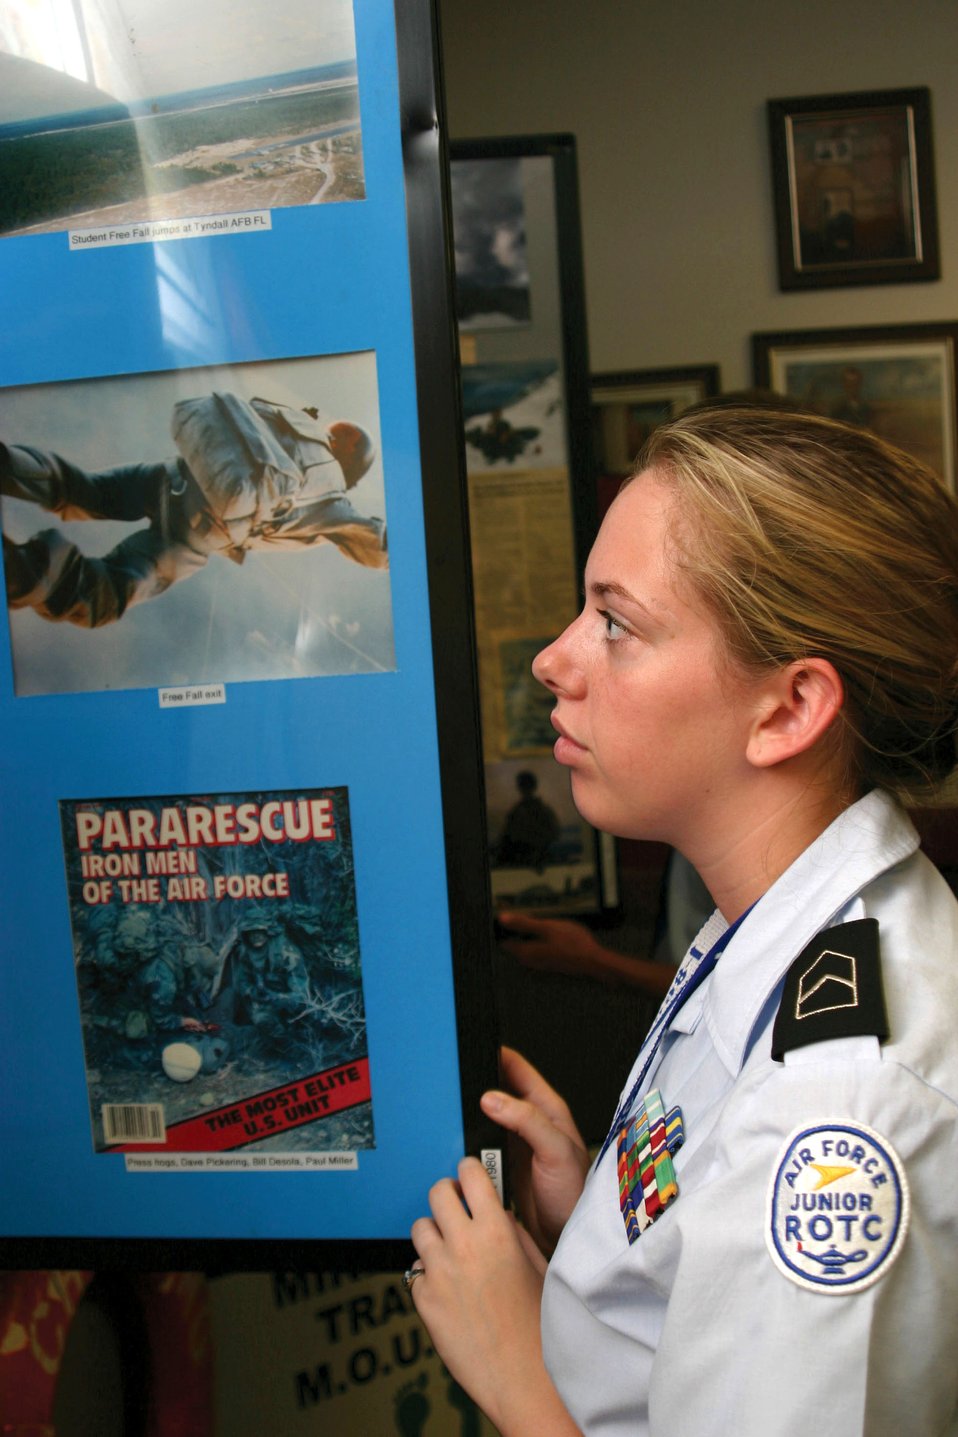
Junior ROTC

Air Force Junior ROTC Cadet Stephanie Hurstell looks through a display July 26 during a visit to the Pararescue and Combat Rescue Officer Training School at Kirtland Air Force Base, N.M. Air Force officials continually seek retired Airmen, including Guard and Reserve, from any Air Force specialty who are interested in becoming an AFJROTC instructor.